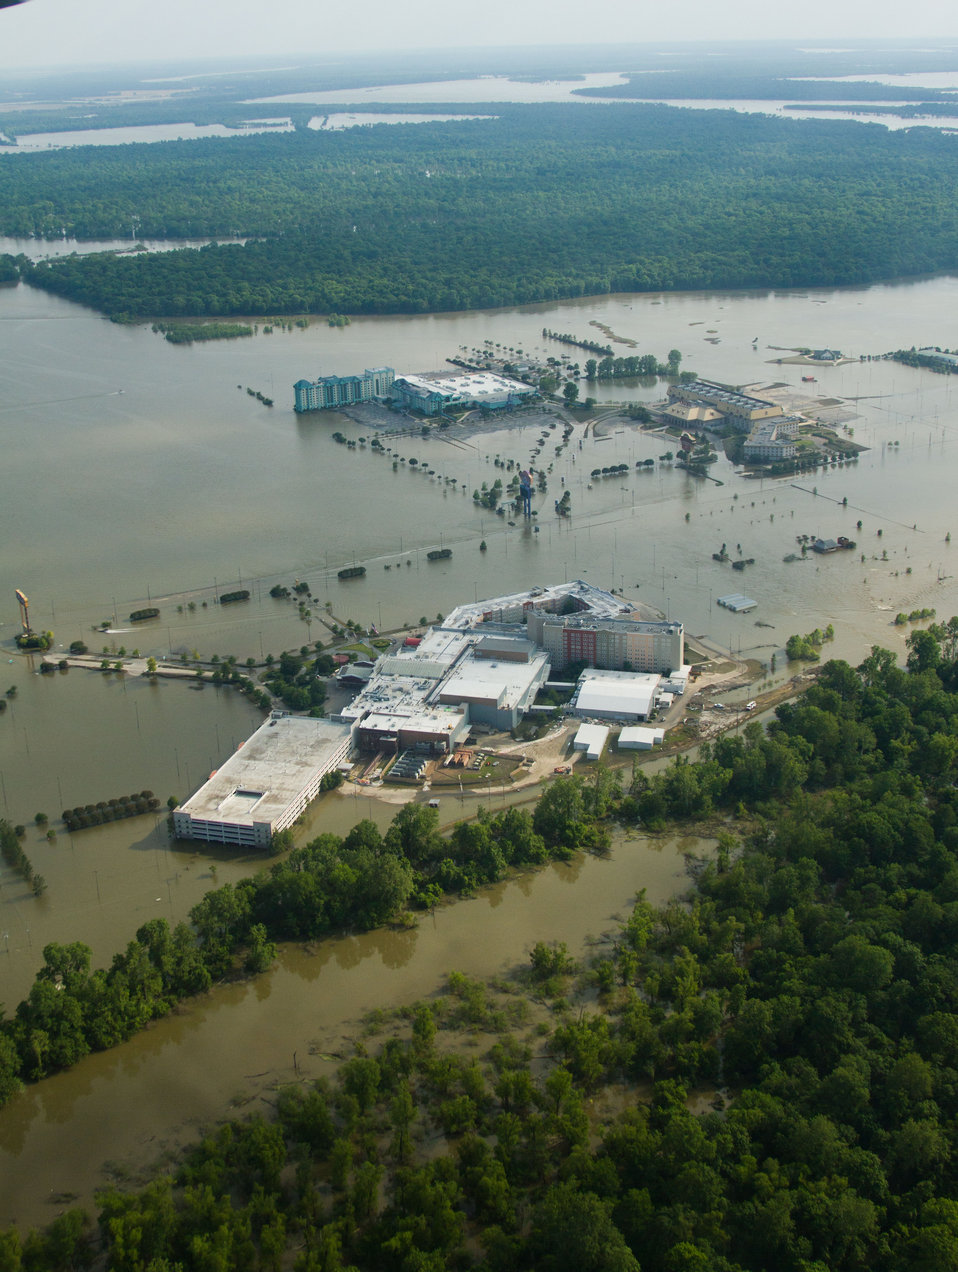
Aerial view of some of the casinos in Tunica, MS. Surrounded by flood waters from the Mississippi River, on Thursday, May 19, 2011. Aerial platform was a UH-60 Blackhawk commanded by Col. Kennedy and his flight crew from the Army Aviation Support Facility #1 at Hawkins Field in Jackson.